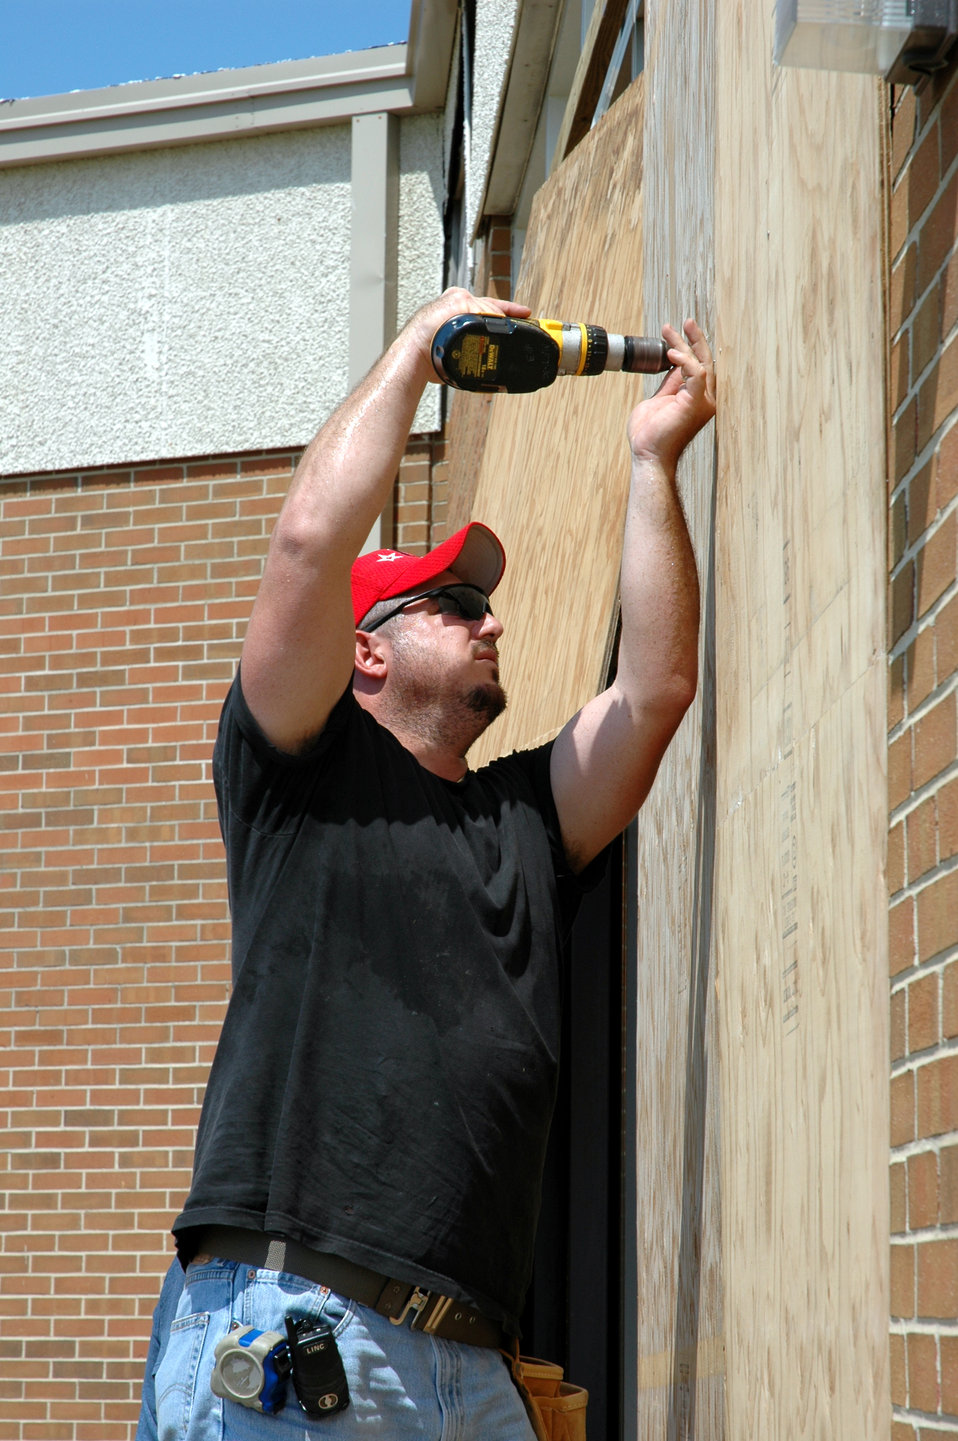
Hurricane Dennis eyes Gulf Coast

EGLIN AIR FORCE BASE, Fla. -- Dan Banach boards up the windows on the officer's club here in preparation for Hurricane Dennis. The club sits on the banks of the Choctawhatchee Bay. People here began evacuating July 8 as Hurricane Dennis heads for the Emerald Coast.